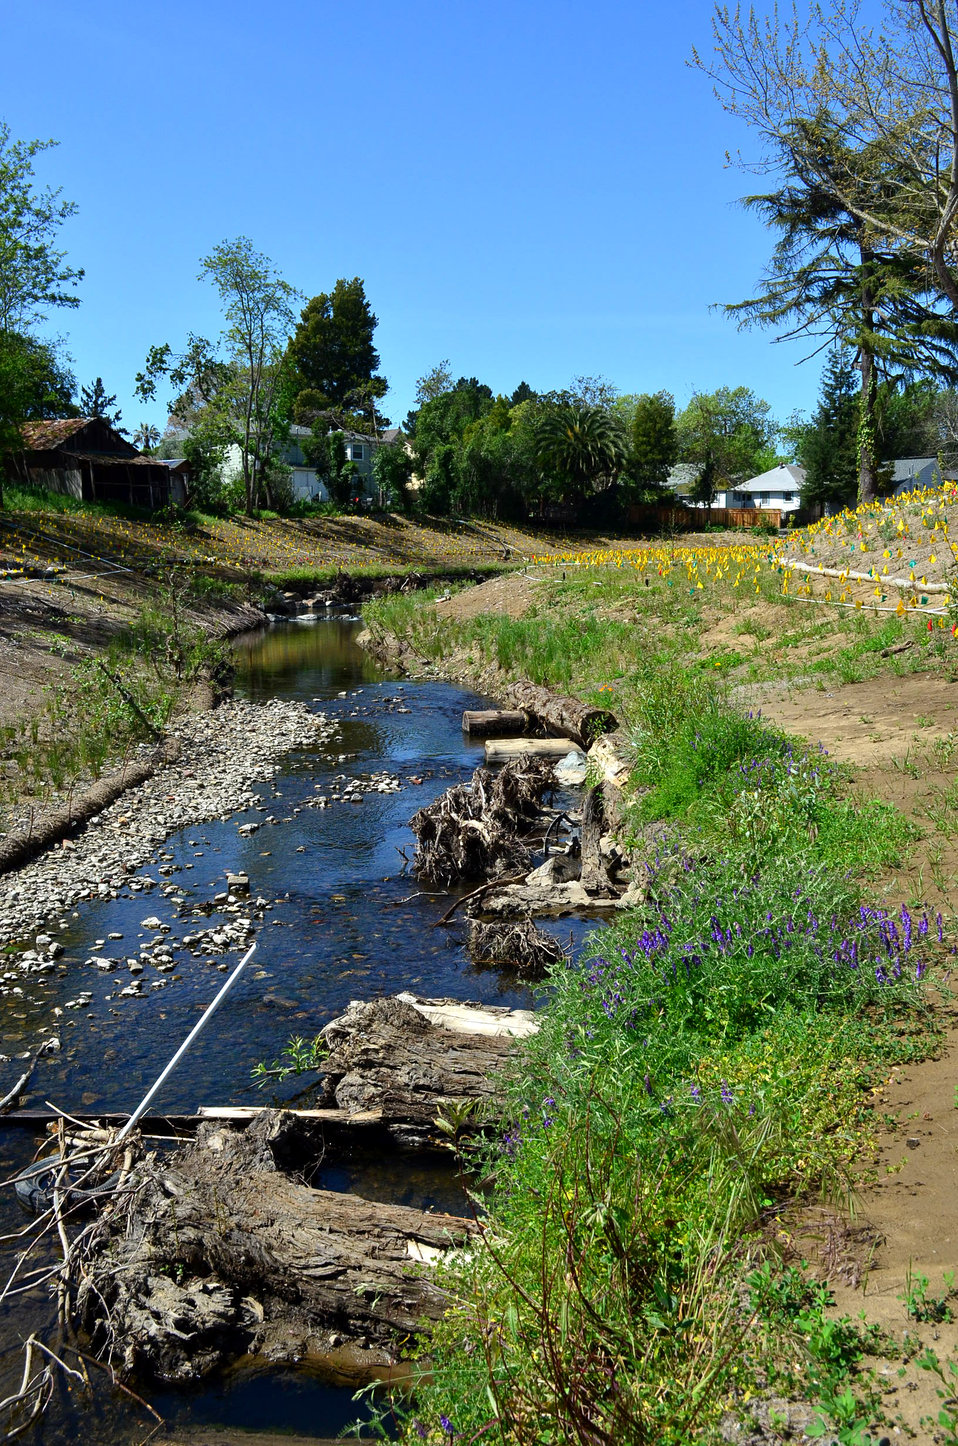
New pedestrian bridge last major phase of Corps’ Napa Creek project

Tree trunks peek out from the banks of the Napa Creek in Napa, Calif., April 12, 2013. The tree trunks, as well as thousands of native species plantings, will provide habitat for fish and other river species. The environmental restoration work is part of the $14.8 million Napa Creek Project, a joint effort of the U.S. Army Corps of Engineers, the city of Napa, and the Napa Flood Control and Water Conservation District funded by the American Recovery and Reinvestment Act of 2009 to reduce flood risk for the city. The Corps also widened the creek and installed box culverts – tunnels large enough for a car to drive through – in October 2012 to help move flood water from the creek more quickly to the Napa River and away from homes and businesses.